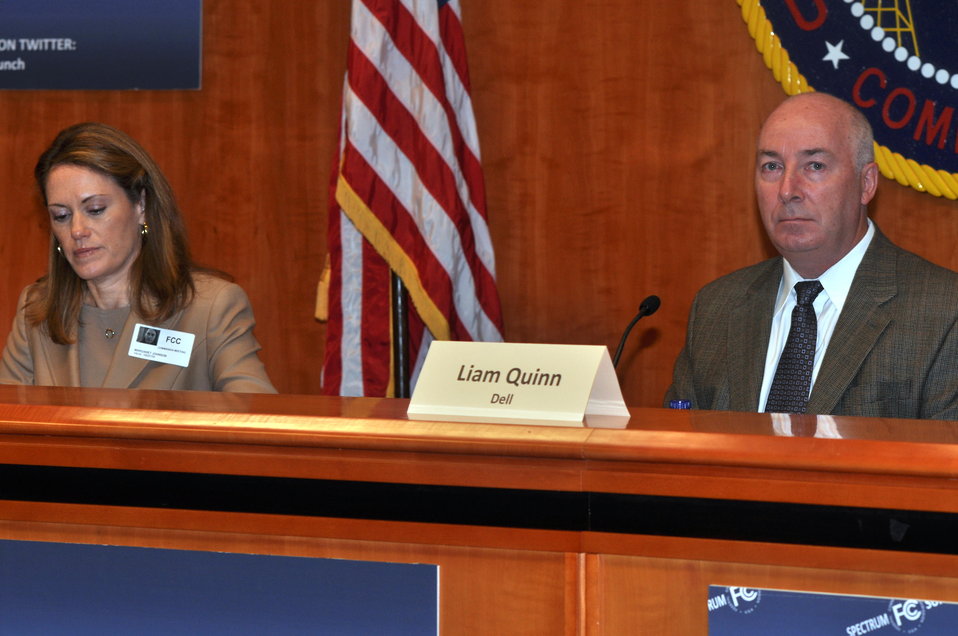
Spectrum Summit